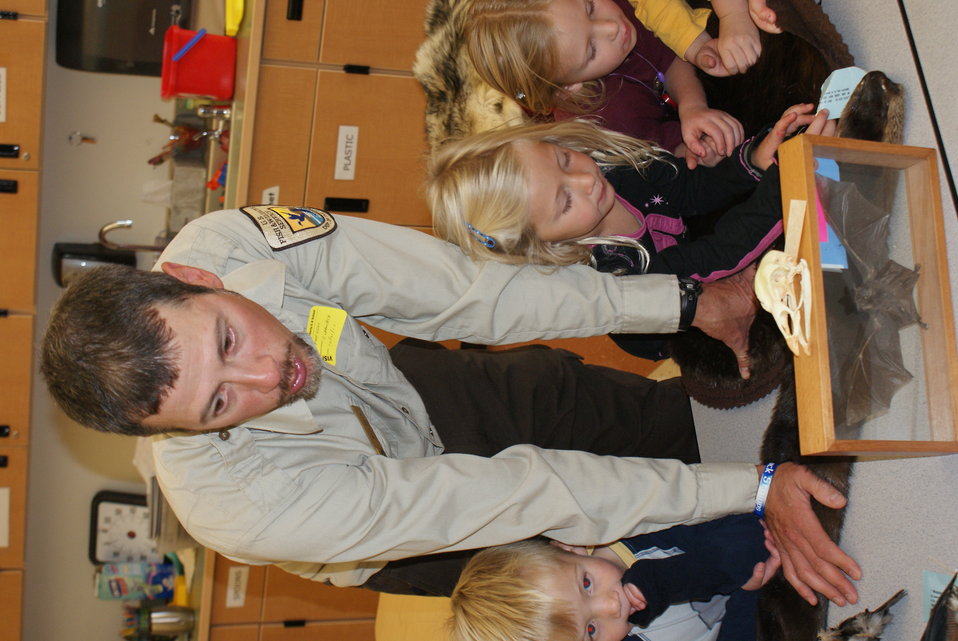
Scientists in the Community Program

U.S. Fish and Wildlife Service Mountain-Prairie Region Deputy ARD for External Affairs, Matt Kales, introduces early childhood education students at William Roberts Elementary School in Denver to some of Colorado's native and historic wildlife species.